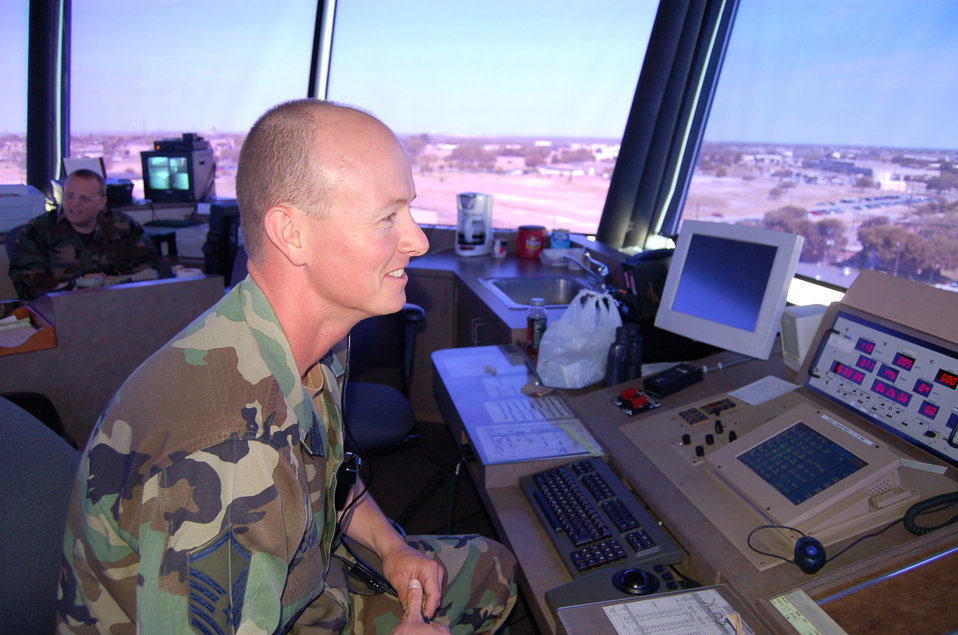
Laughlin students keep air traffic controllers busy

Master Sgt. Daniel Comer monitors flightline activity from the air traffic control tower at Laughlin Air Force Base, Texas, on June 26, 2006. Sergeant Comer, from Hallstead, Pa., is an air traffic controller with the 47th Operations Support Squadron.